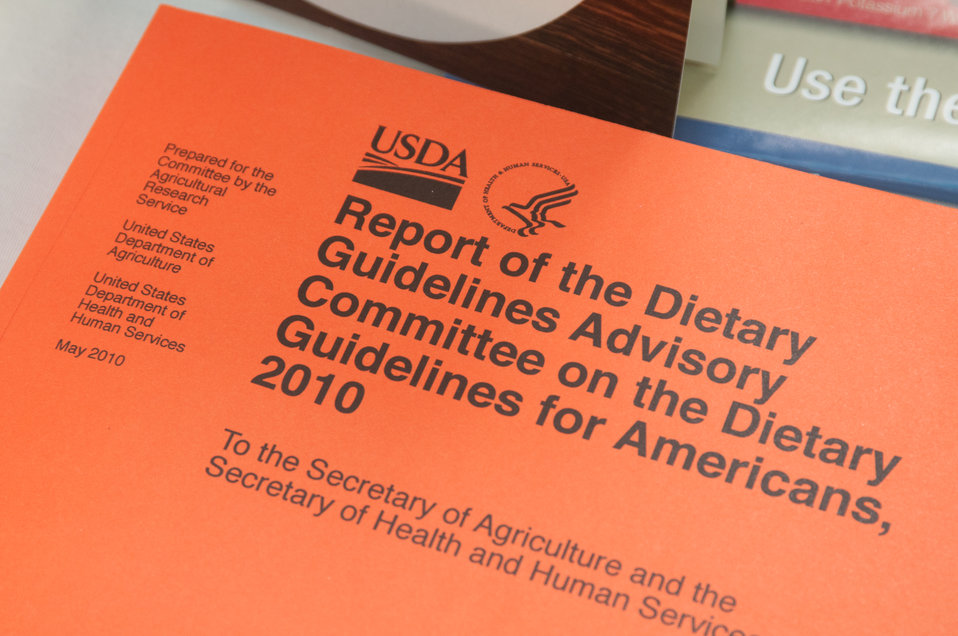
The Department of Agriculture celebrated the introduction of the Dietary Guidelines for Americans, 2010 with an information event in the Whitten Café in Washington, D.C., on Wednesday, March 2, 2011. This first Wednesday event of March, had representatives from Agricultural Marketing Service (AMS); Agricultural Research Service (ARS - including Food and Nutrition Information Center - FNIC, and Food Safety Information Center – FSIC); Economic Research Service (ERS); Food, Nutrition & Consumer Services (FNCS); Food Safety and Inspection Service (FSIS); National Institute of Food and Agriculture (NIFA); USDA Office of Operations (Departmental Management); Food and Drug Administration (FDA); and Sodexo.